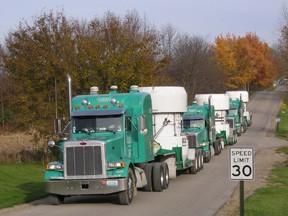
TRU Shipments to WIPP

Shipments of transuranic (TRU) waste destined for the Waste Isolation Pilot Plant in Carlsbad, NM.